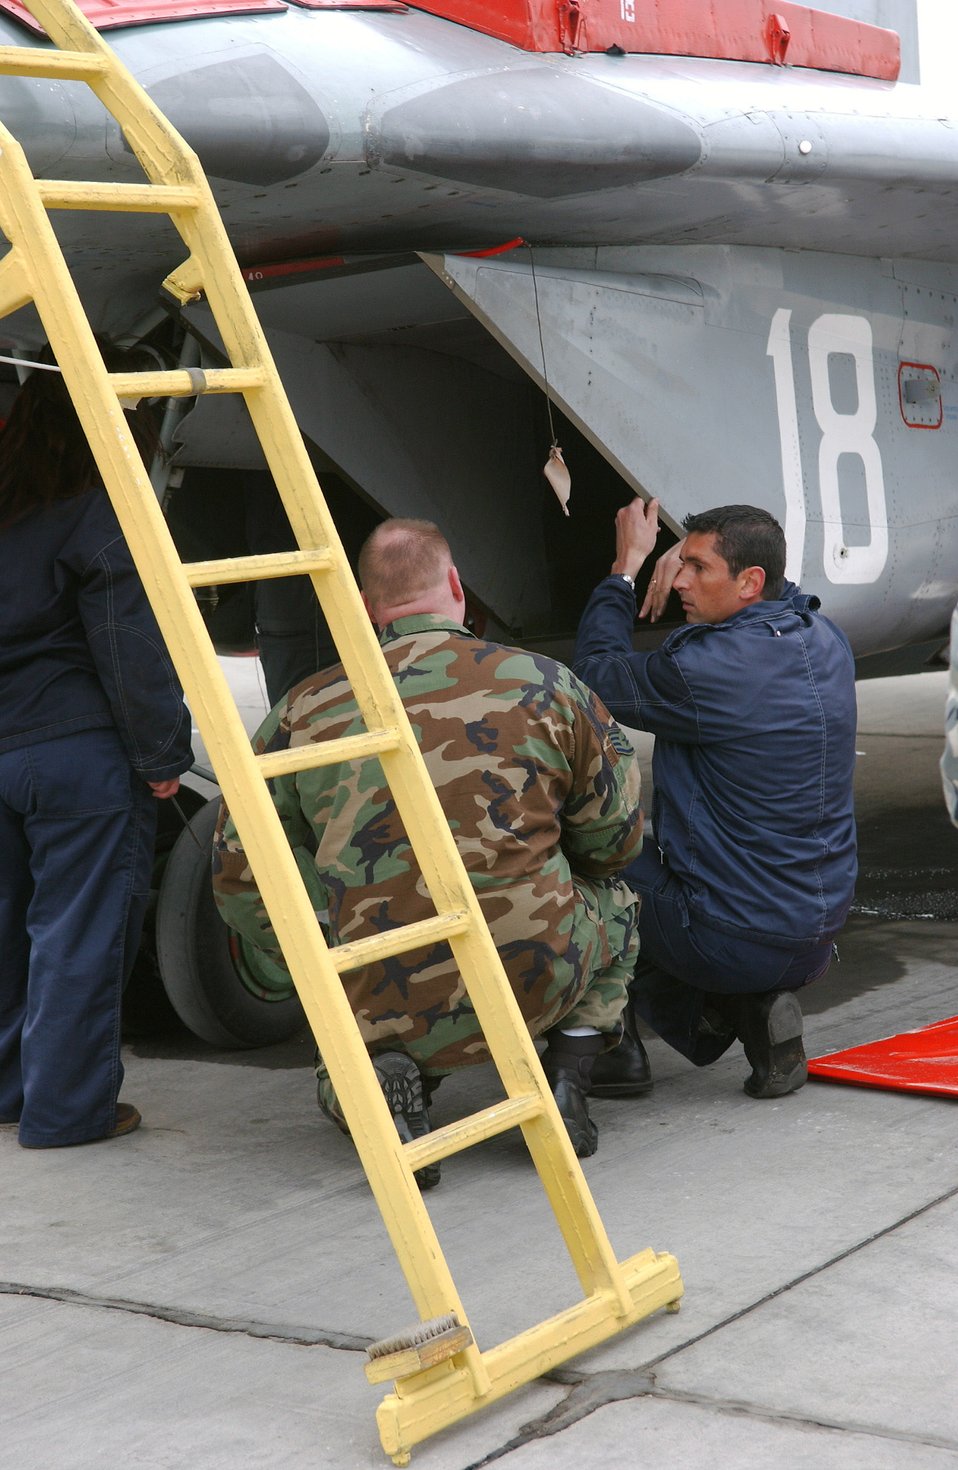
Program benefits American, Bulgarian maintainers

Bulgarian air force Master Sgt. Vladimir Kolev briefs Staff Sgt. Robert Jackson on MiG-29 maintenance procedures April 2 at Graf Ignatievo Air Base, Bulgaria. As part of a familiarization program, a few U.S. Air Force Airmen were allowed to tour a MiG-29 and watch Bulgarian airmen perform a depot inspection. Sergeant Jackson, an F-15 Eagle crew chief, is deployed for Operation Noble Endeavor. Sergeant Kolev is a MiG-29 crew chief.